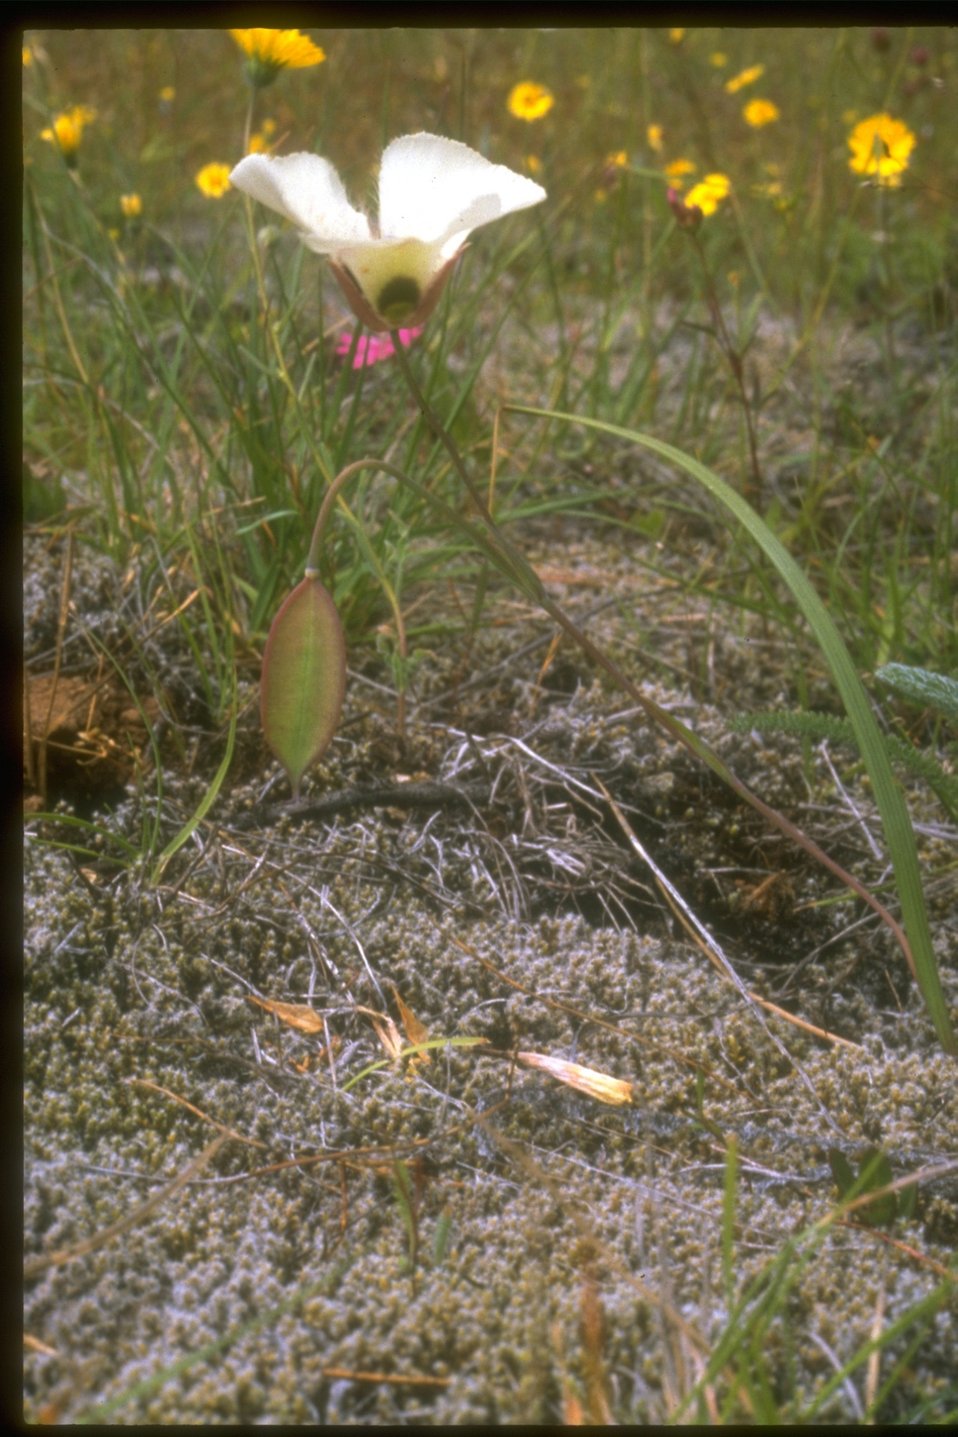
Umpava Mariposa Lily